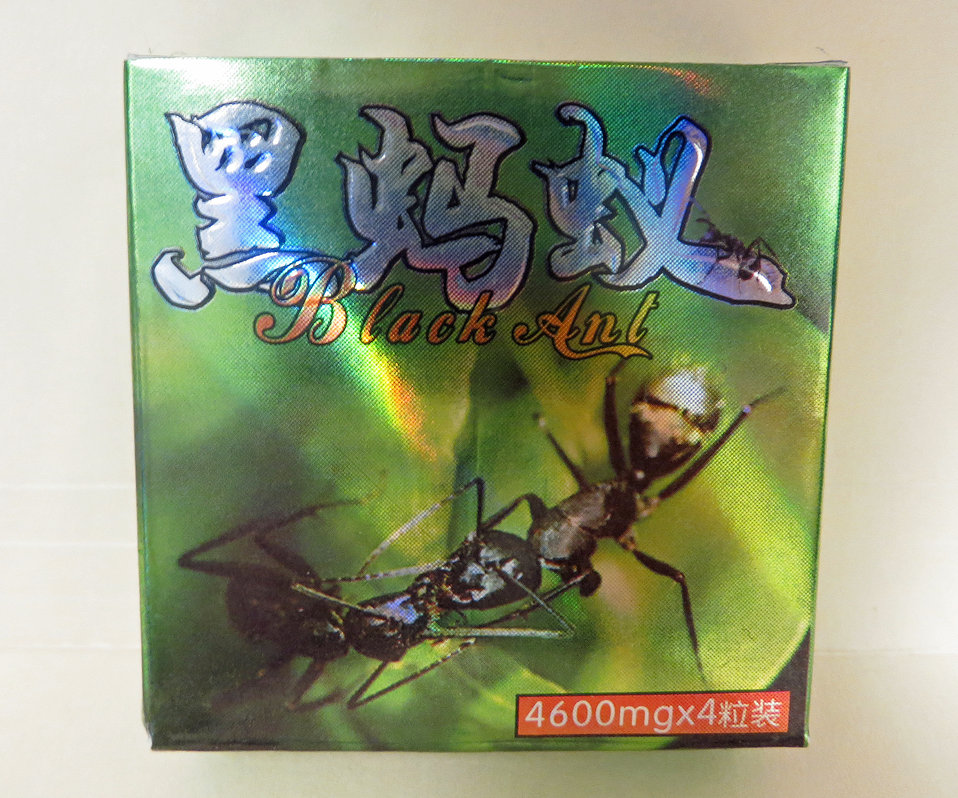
Black Ant

March 16, 2011 - The FDA is advising consumers not to purchase or use 'Black Ant,' a product promoted and sold for sexual enhancement. The product was found to contain undeclared sildenafil. For more information, go to www.fda.gov/Drugs/ResourcesForYou/Consumers/BuyingUsingMe...

And read this Consumer Update: Beware of Fraudulent ‘Dietary Supplements’